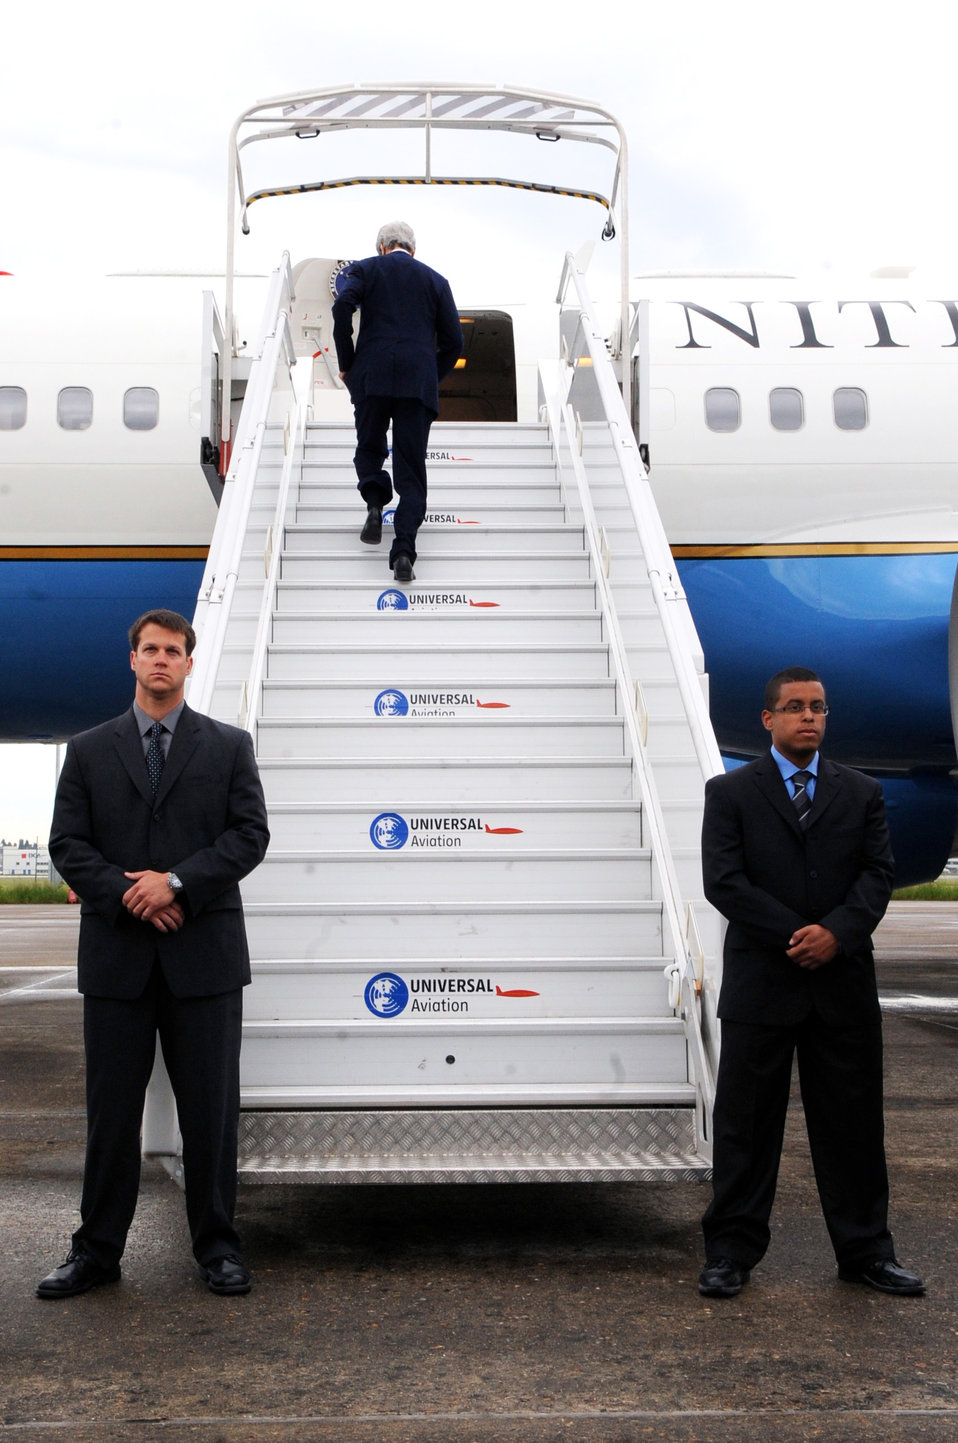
Secretary Kerry Climbs the Stairs of the Plane

U.S. Secretary of State John Kerry climbs up the stairs of the plane before departing from Paris, France, at the end of an eight-day trip on May 28, 2013.